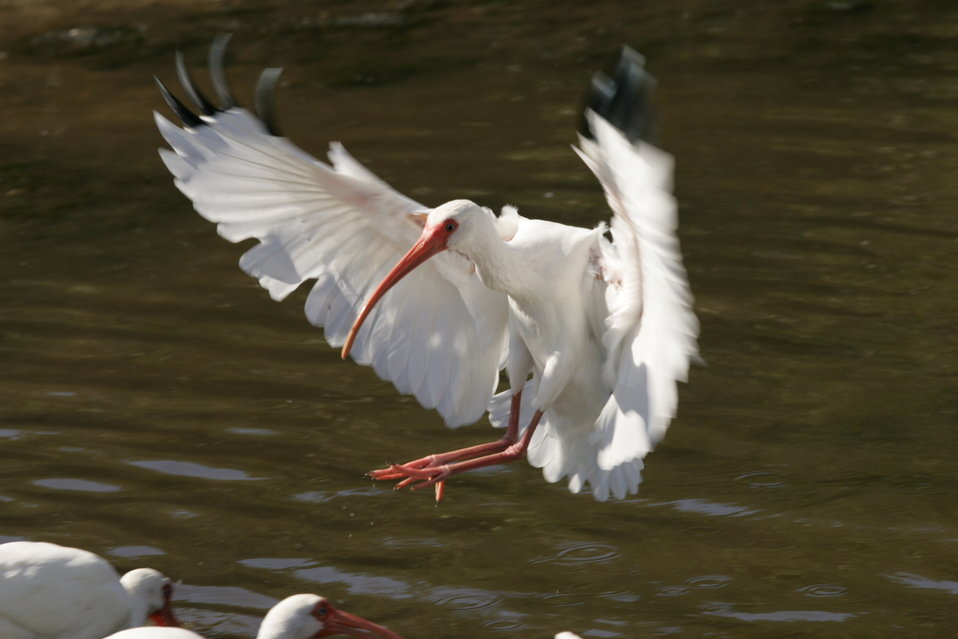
White ibis

J.N. 'Ding Darling' National Wildlife Refuge.